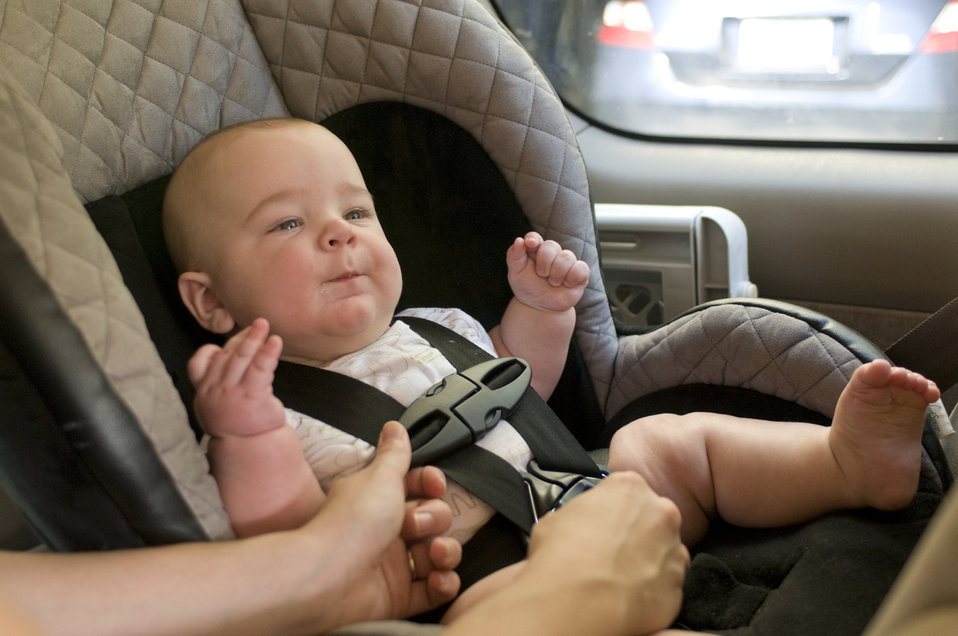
This image depicts a mother in the process of securing her infant child into a back seat-located child safety seat. At this point of the process, she was adjusting her child's fit in the seat, ensuring both the baby's safety and comfort.